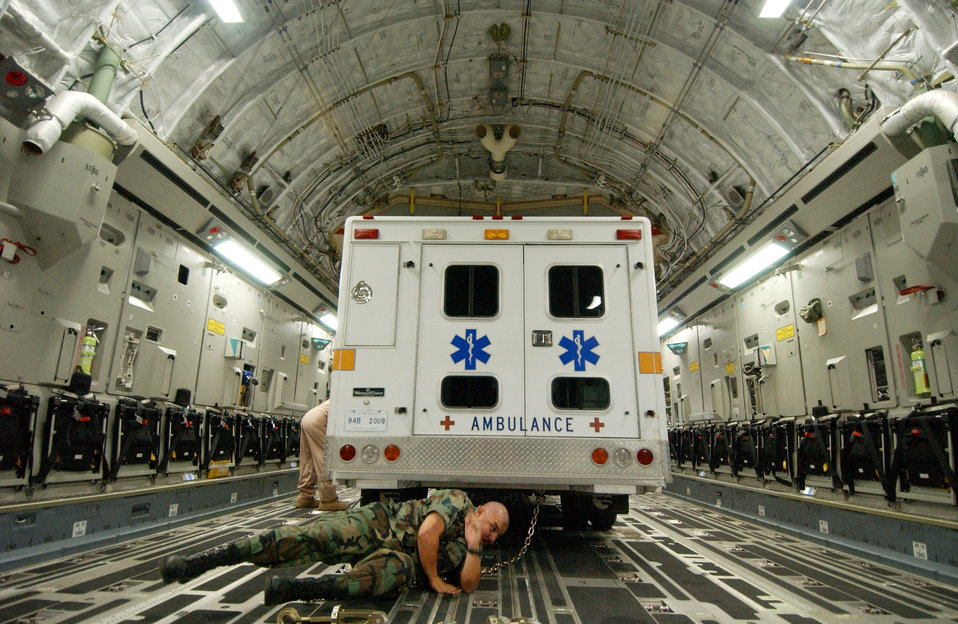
Tied down and no place to go

Tech. Sgt. Gus Corona and aircrew members secure an Air Force ambulance onboard a C-17 Globemaster III. The C-17 is delivering the ambulance to Augusta, Ga.